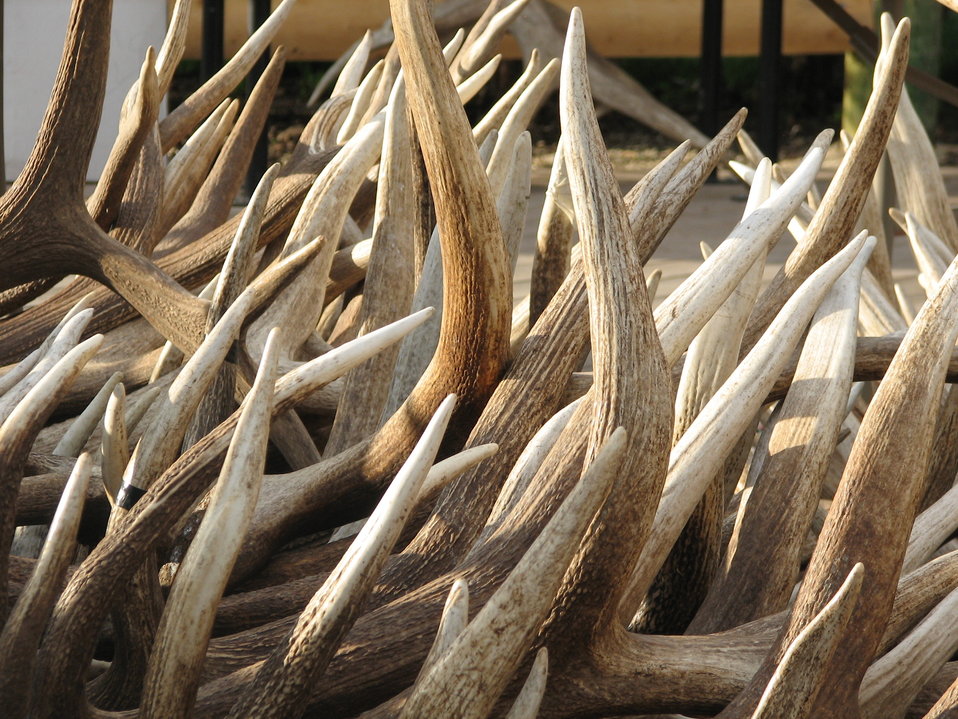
An Unique Photo

A pile of antlers in the morning sun lends itself to an interesting photo.